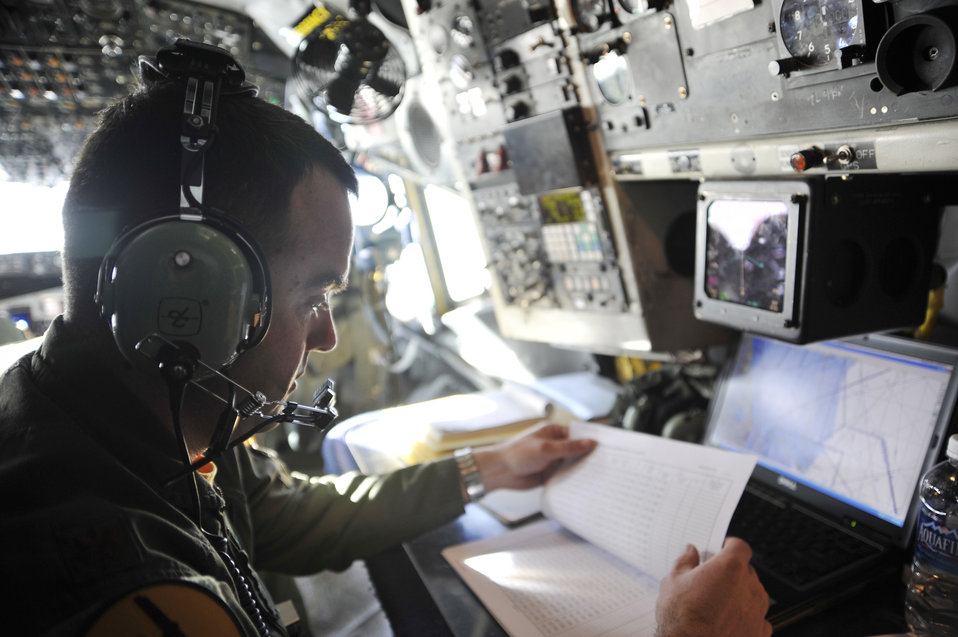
Haiti Observation

Maj. Michael Vanone reviews the flight plan aboard an OC-135B Open Skies aircraft Jan 16, 2010, over Haiti. Army, Navy and Air Force personnel used the capabilities of the OC-135B to photograph Haiti, to get a better understanding of the devastation from the earthquake that hit the island Jan. 12. Major Vanone is a navigator with the 45th Reconnaissance Squadron. The OC-135B is with the 45th Reconnaissance Squadron, Offutt AFB, Neb.